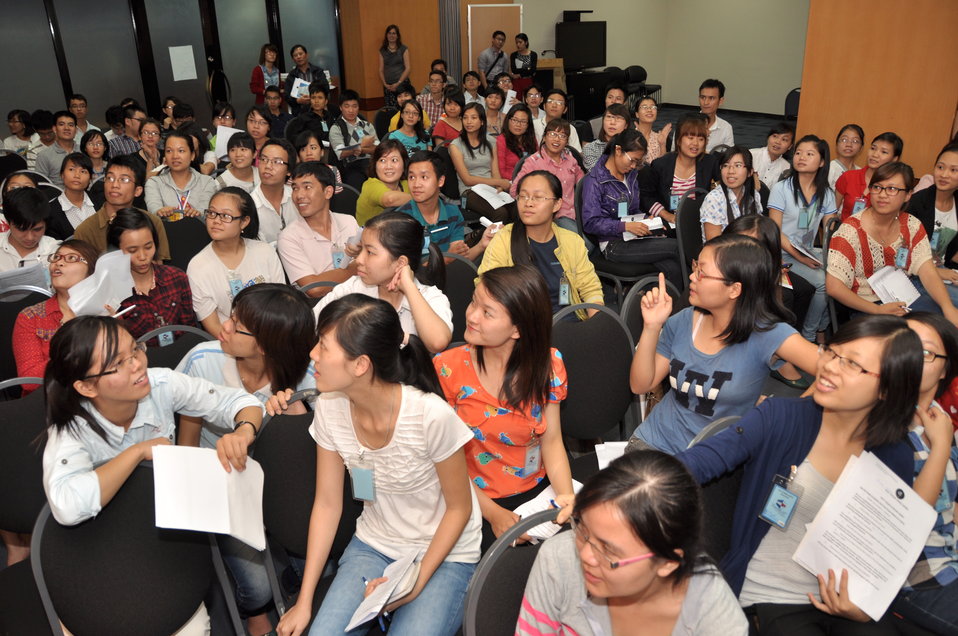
Vietnamese university students join the Business Plan Mashup exercise

Photo: @USAIDVietnam, November 16, 2012